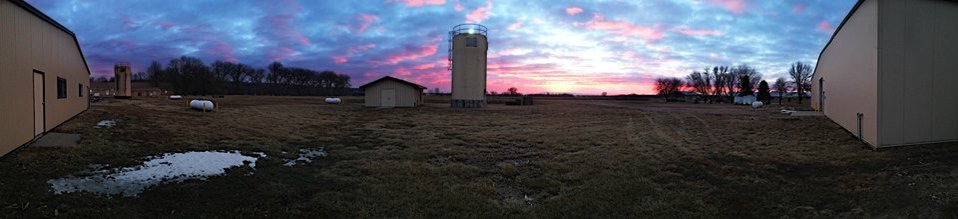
'Red Sky in Morning, Sailor's Warning'

What does a pink sunrise mean?!